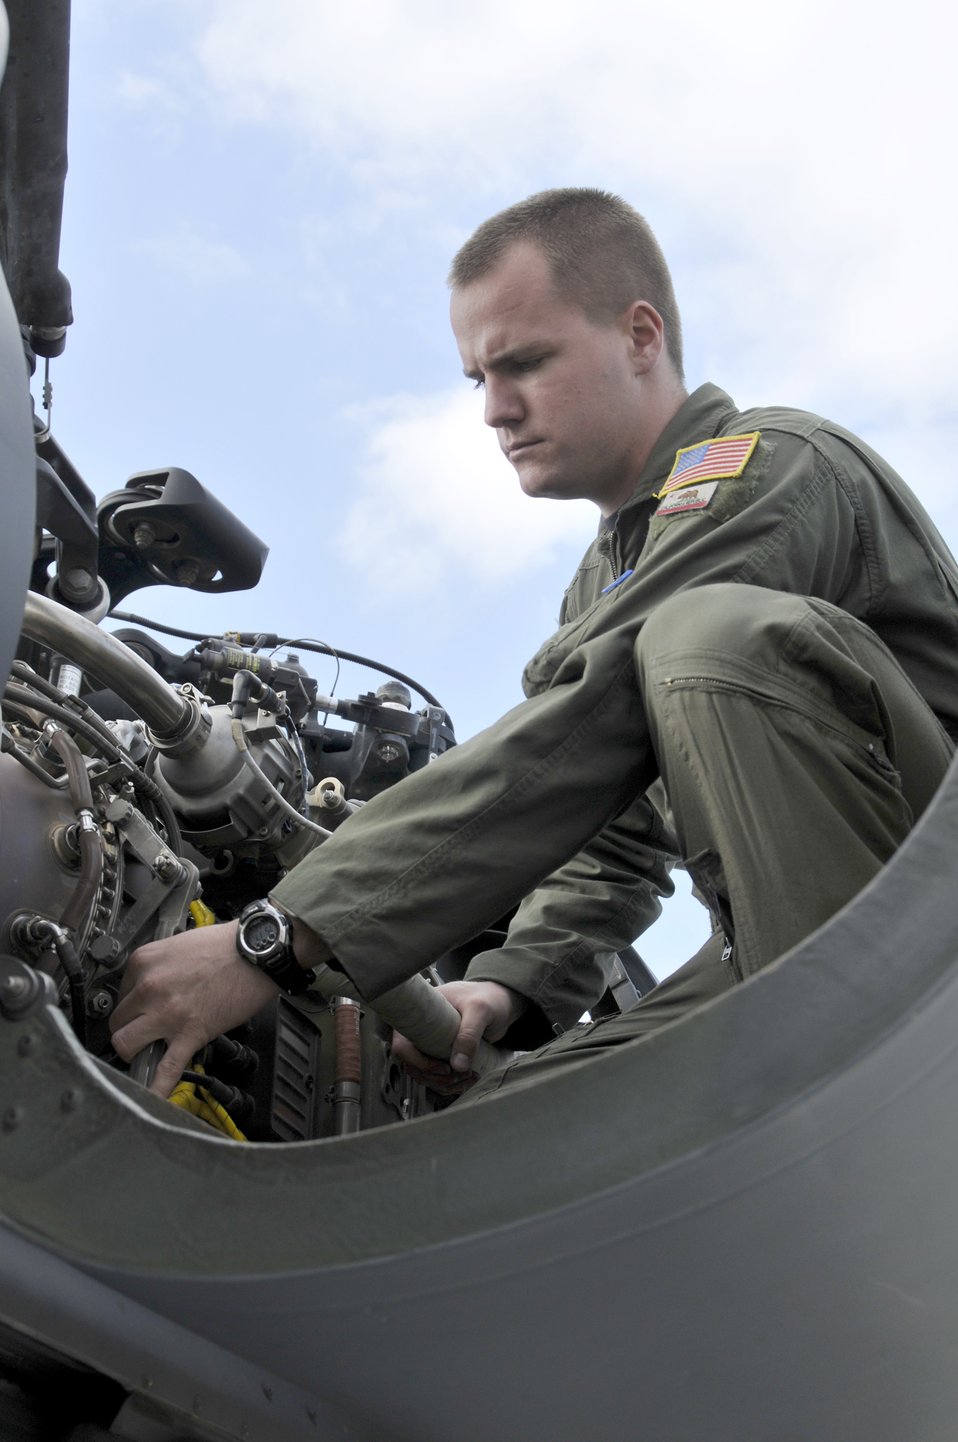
California Coast 'Guard'

Senior Airman Jacob Ellwood conducts a preflight check on a HH-60G Pave Hawk helicopter Nov. 6, 2010, at Moffett Federal Airfield, Calif. Airman Ellwood is a flight engineer assigned to the California Air National Guard's 129th Rescue Squadron.